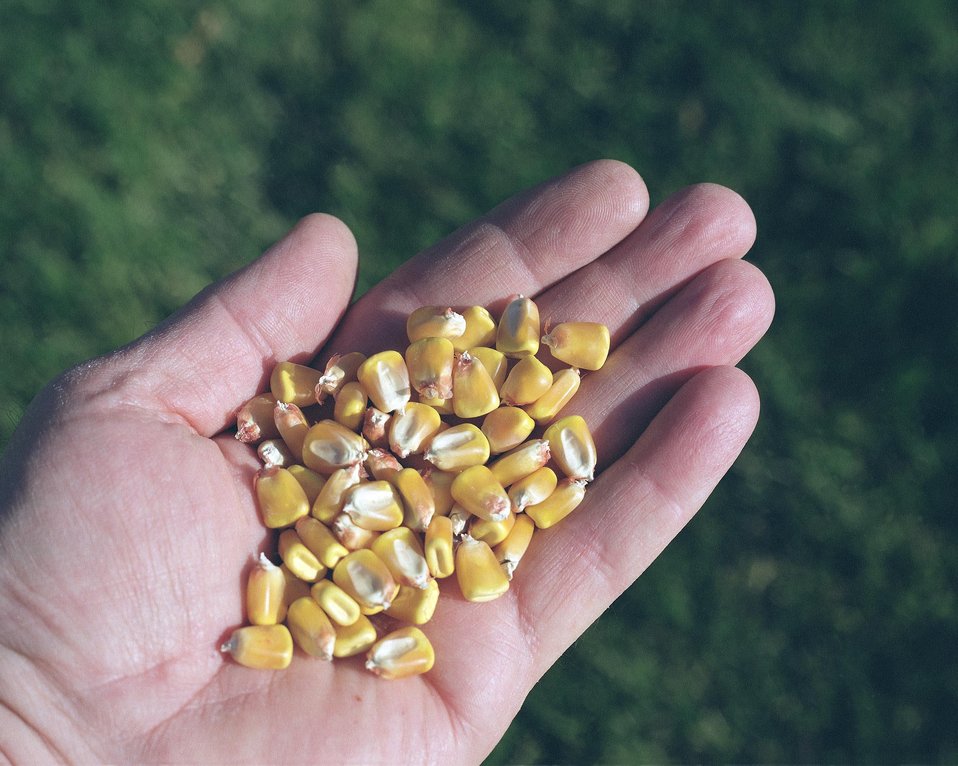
CORN KERNELS.

NREL RESEARCHER IN THE DOE BIOFUELS PROGRAM ARE DEVELOPING TECHNOLOGY TO PRODUCE ETHANOL FROM THE FIBROUS MATERIAL (CELLULOSE AND HEMICELLULOSE) IN THE CORN STALKS AND HUSKS OR OTHER AGRICULTURAL OR FORESTRY RESIDUES.